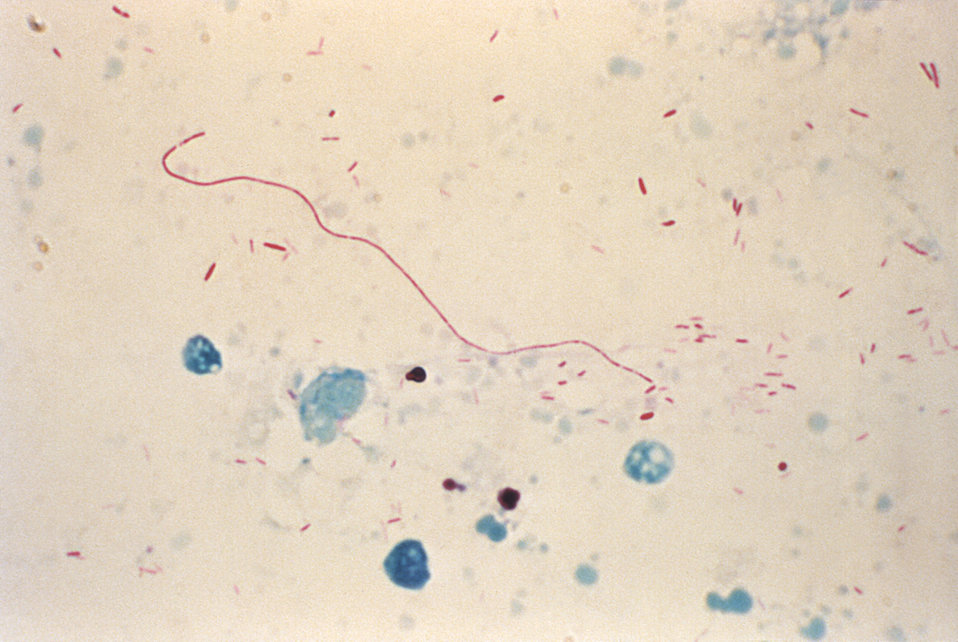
This micrograph reveals the presence of Legionella pneumophila bacteria in an inoculated chick yolk sac suspension specimen, and prepared using an carbol-basic fuchsin Gimenez stain solution, and counterstained using malachite green.